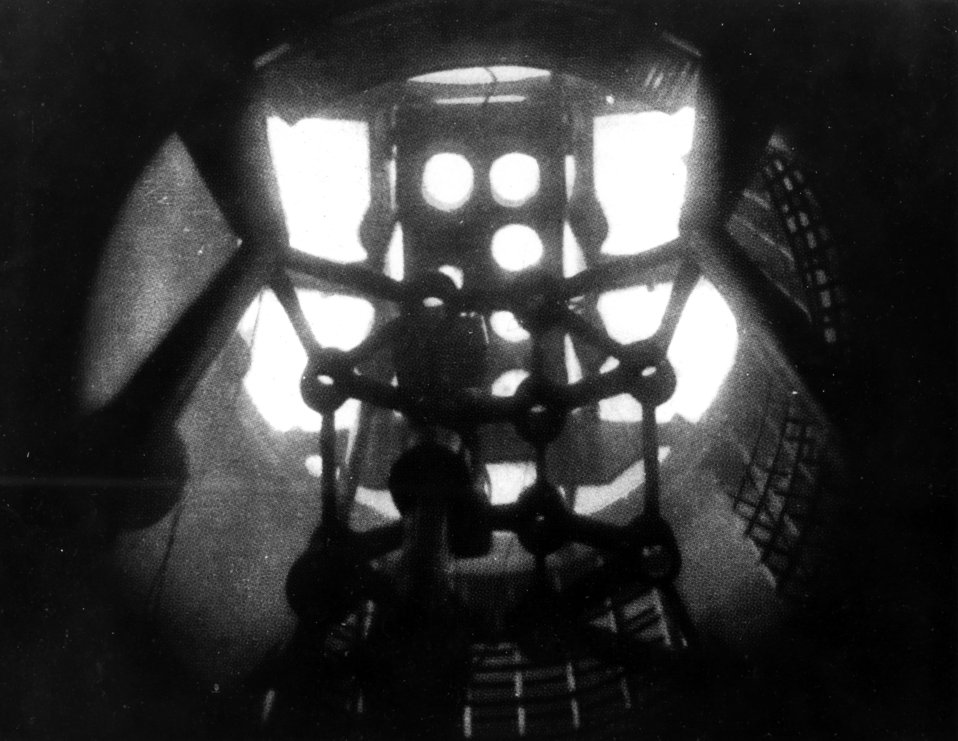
A 'self portrait of a reactor' -- made by the light of the blue glow known as Carenkov radiation, produced by operation of the Low Intensity Test Reactor. c. 1954